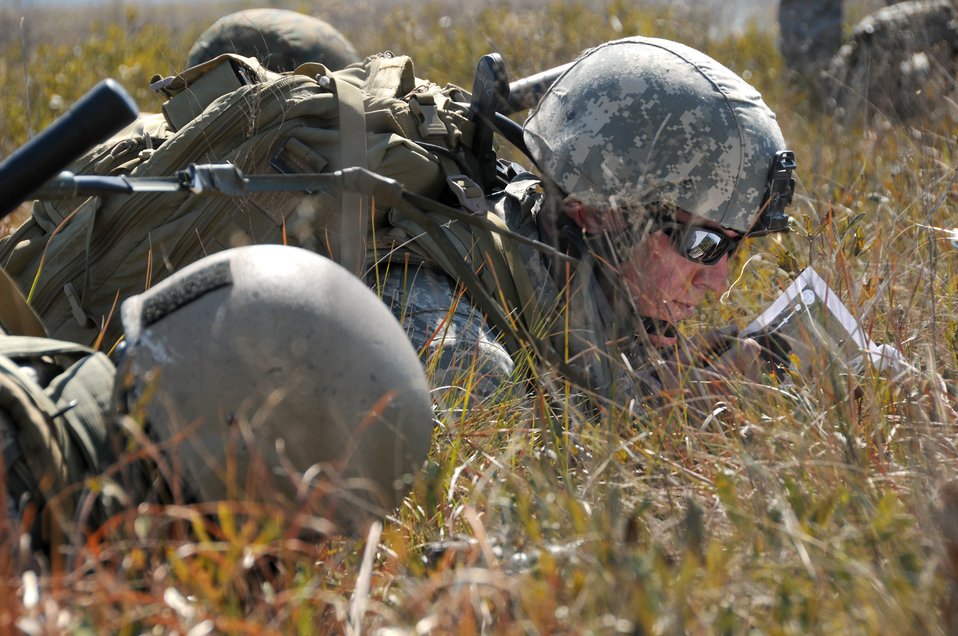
You are here

Staff Sgt. Cody McNorton studies a map Feb. 15, 2011, during exercise Atlantic Strike at Avon Park Air Force Range, Fla. Sergeant McNorton is assigned to the 14th Air Support Operations Squadron.